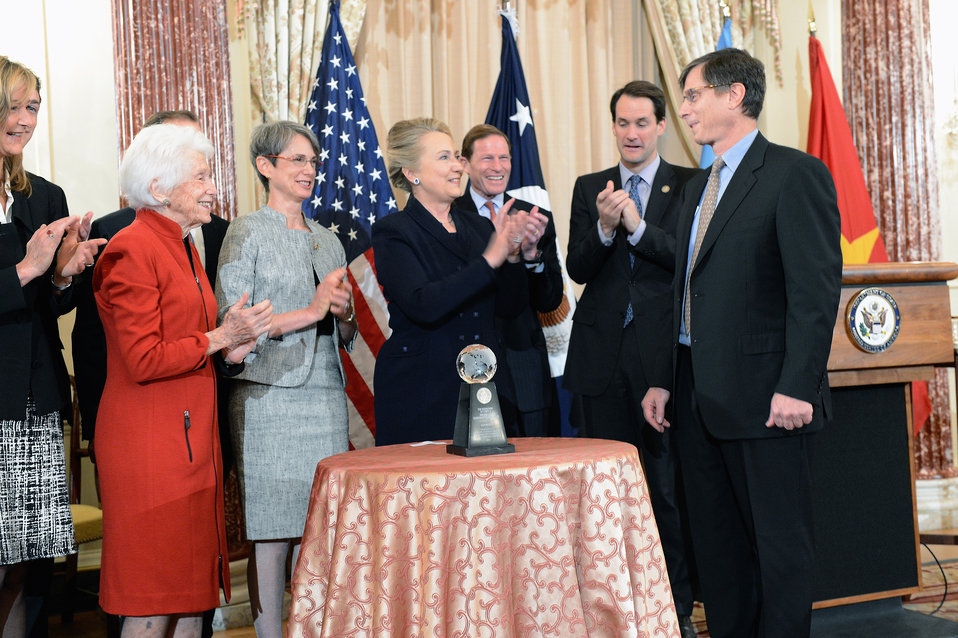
Secretary Clinton Presents the 14th Annual Award for Corporate Excellence

U.S. Secretary of State Hillary Rodham Clinton presents the 14th Annual Award for Corporate Excellence (ACE) at the U.S. Department of State in Washington, D.C., November 28, 2012.